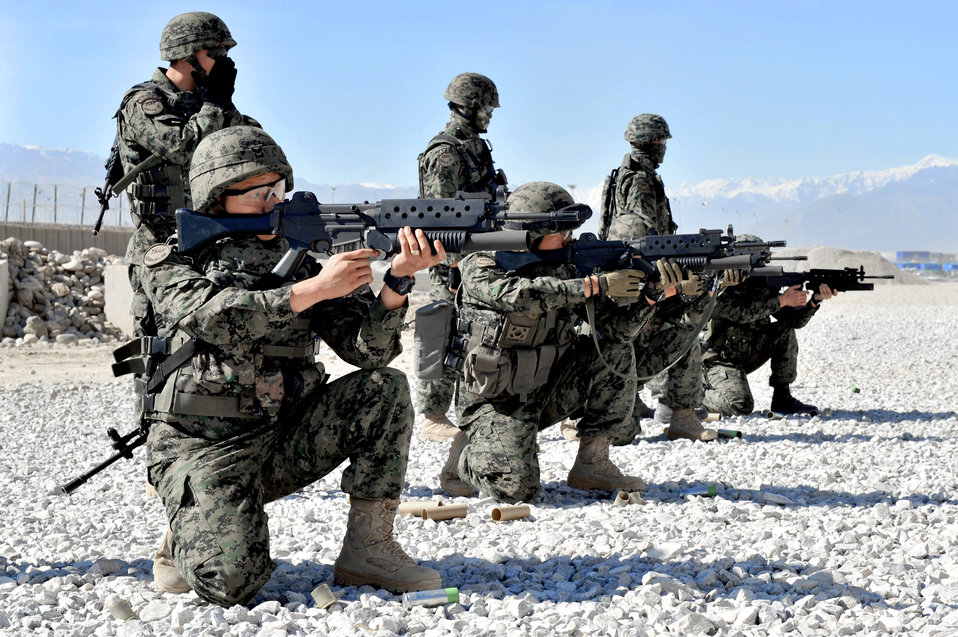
Korean soldiers integrate into Bagram's base defense

South Korean security forces soldiers take position before firing non-lethal munitions during escalation-of-force training at Bagram Airfield, Afghanistan, April 22, 2011. The soldiers have to qualify on the M203 grenade launcher before joining Bagram's base defense.